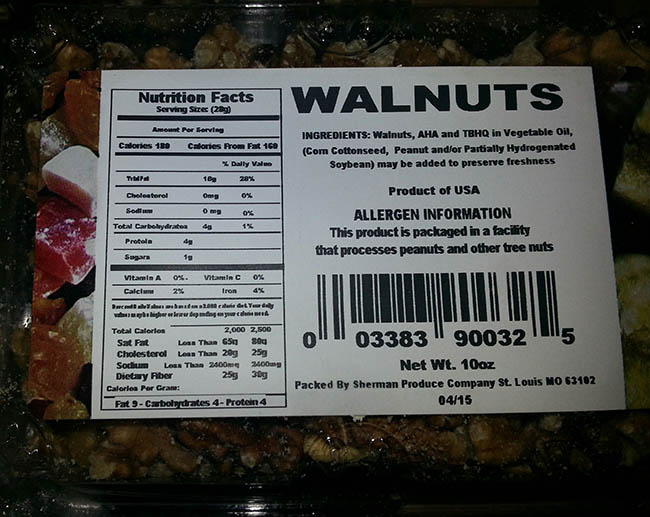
RECALLED – Walnuts

May 21, 2014 – Product Recall – Sherman Produce Recalls Bulk and Packaged Walnuts Due to Possible Health Risk.